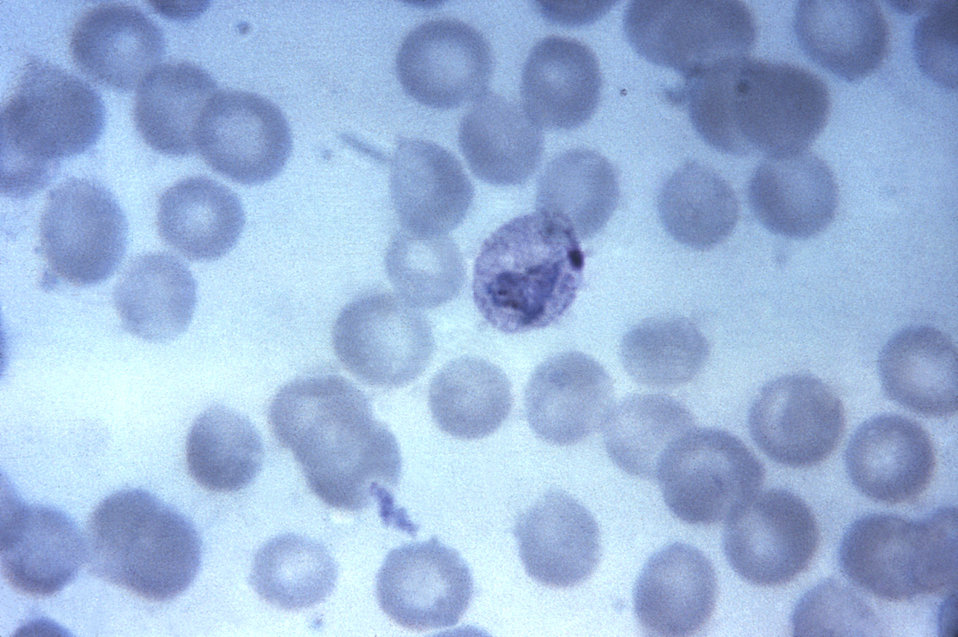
This thin film Giemsa stained micrograph depicts a growing Plasmodium vivax trophozoite.